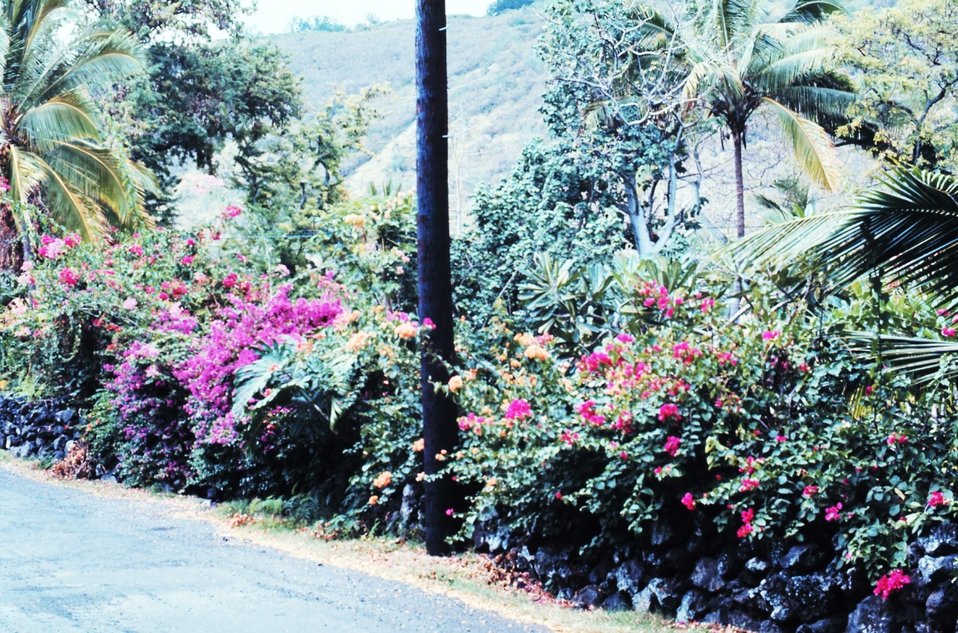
Roadside flowers